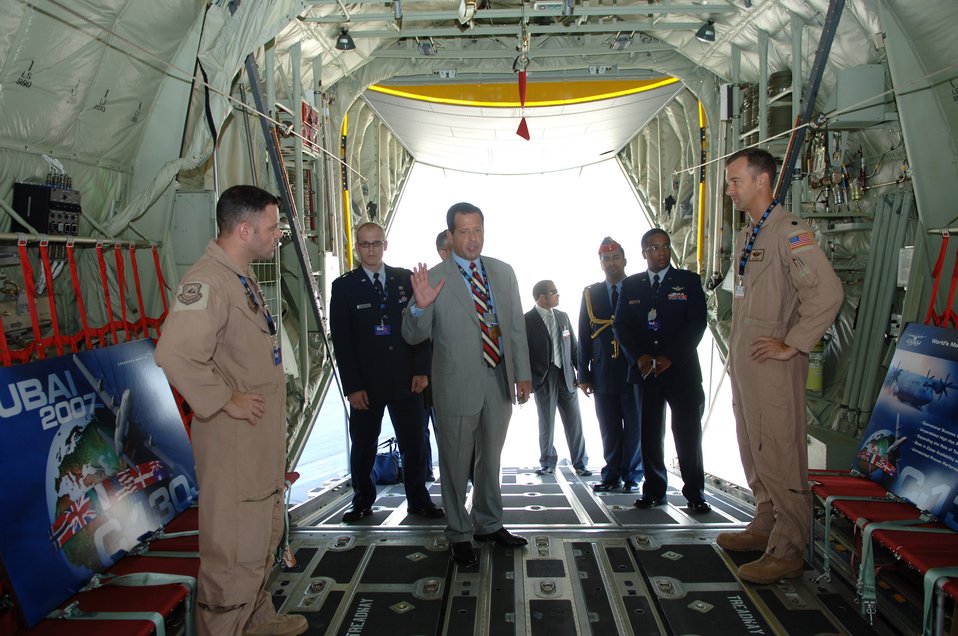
Dubai Air Show

Deputy Under Secretary of the Air Force Bruce Lemkin talks to Tech. Sgt. Steve Nader (left) and Lt. Col. Jeff Gast during a tour of a C-130 Hercules at the Dubai Air Show Nov. 12. Colonel Gast and Sergeant Nader are assigned to the 41st Airlift Squadron at Little Rock Air Force Base, Ark. The United States military provided support for the 10th annual Dubai Air Show Nov. 11 to 15. Approximately 300 Airman, Soldiers and Sailors, and various Air Force and Navy aircraft from bases in the Persian Gulf region and the United States exhibit a snapshot of the U. S. military's diverse aircraft inventory. The air show was an opportunity to build relationships with allied partners.